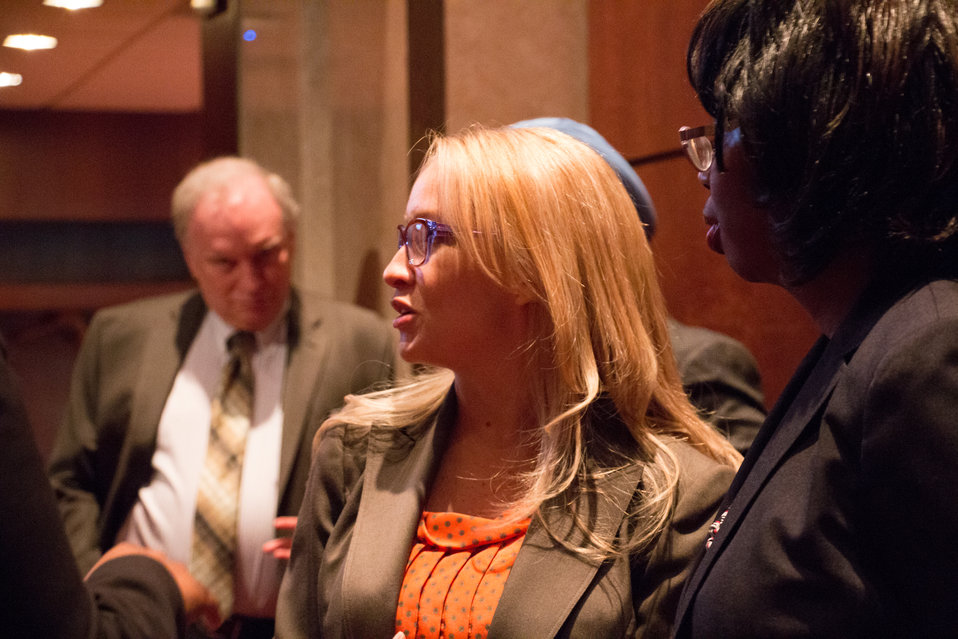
VHAP Launch (390 of 511)